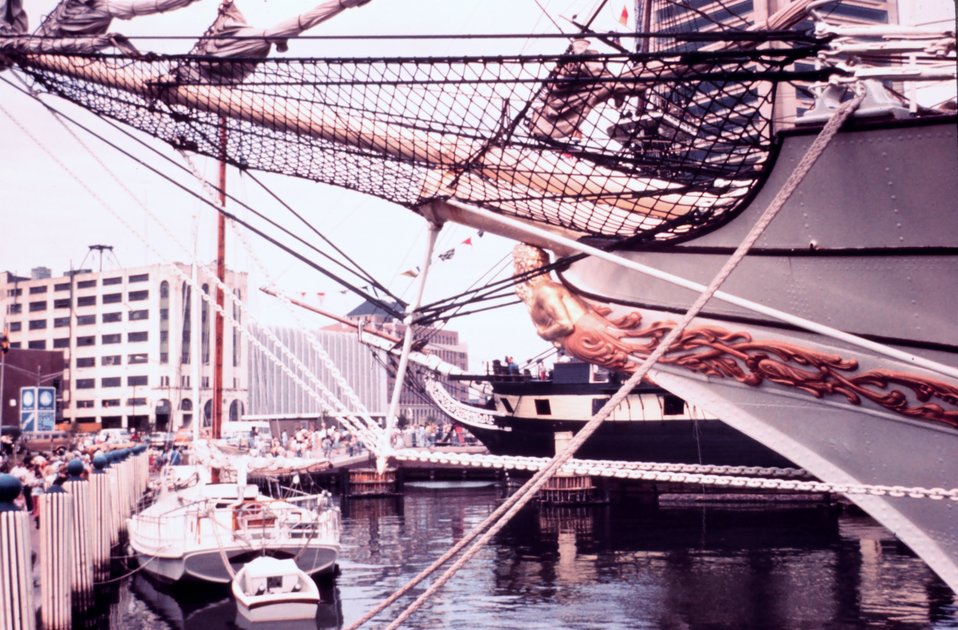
The bow of the DANMARK, Danish tall ship, tied up in Manhattan